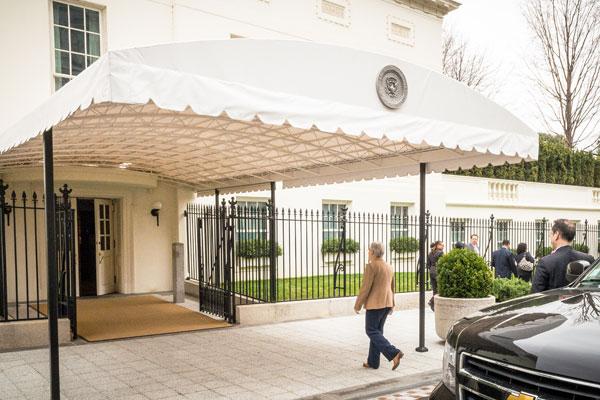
Day in the Life - April 4, 2014

1:10 pm - McCarthy enters the West Wing for a meeting with White House officials. Given the focus on climate change, and the key role EPA plays on the issue, McCarthy spends considerable time coordinating with the president’s senior advisors. (10/12)